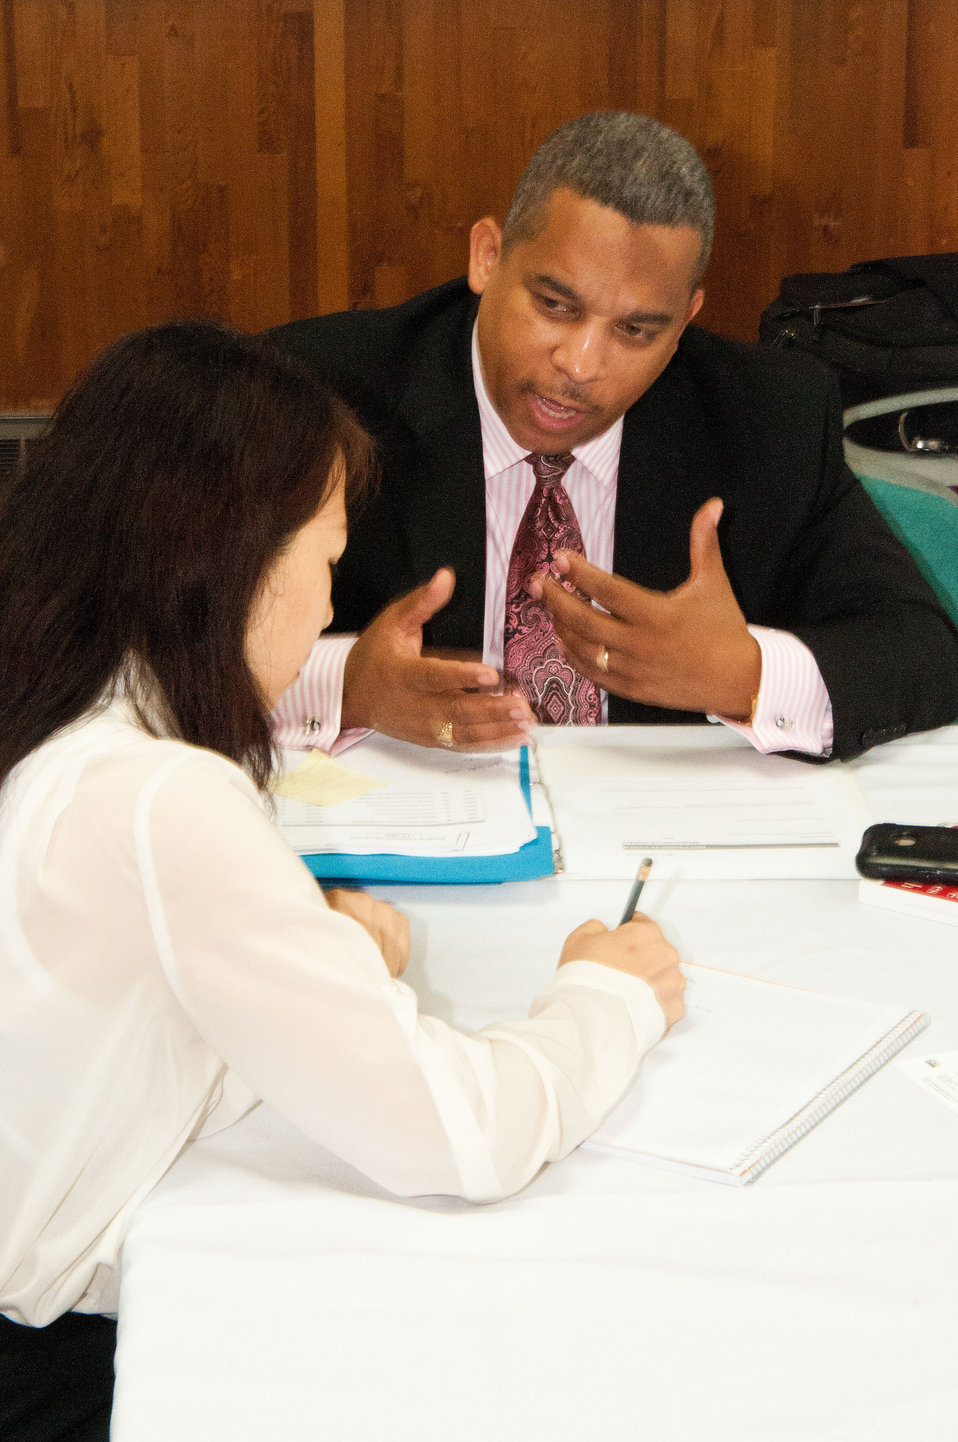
U.S. Department of Agriculture (USDA) Departmental Management (DM) and mentor Robin Bailey (right), discusses “Crucial Conversations,” decisive and important communication with employers, employees and clients with May Ling McKee (left) at USDA’s Office of Human Resources Management (OHRM) Virtual University’s Fall Flash Mentoring Event at USDA in Washington, D.C. on Thursday, Sept. 6, 2012 in Washington, DC.